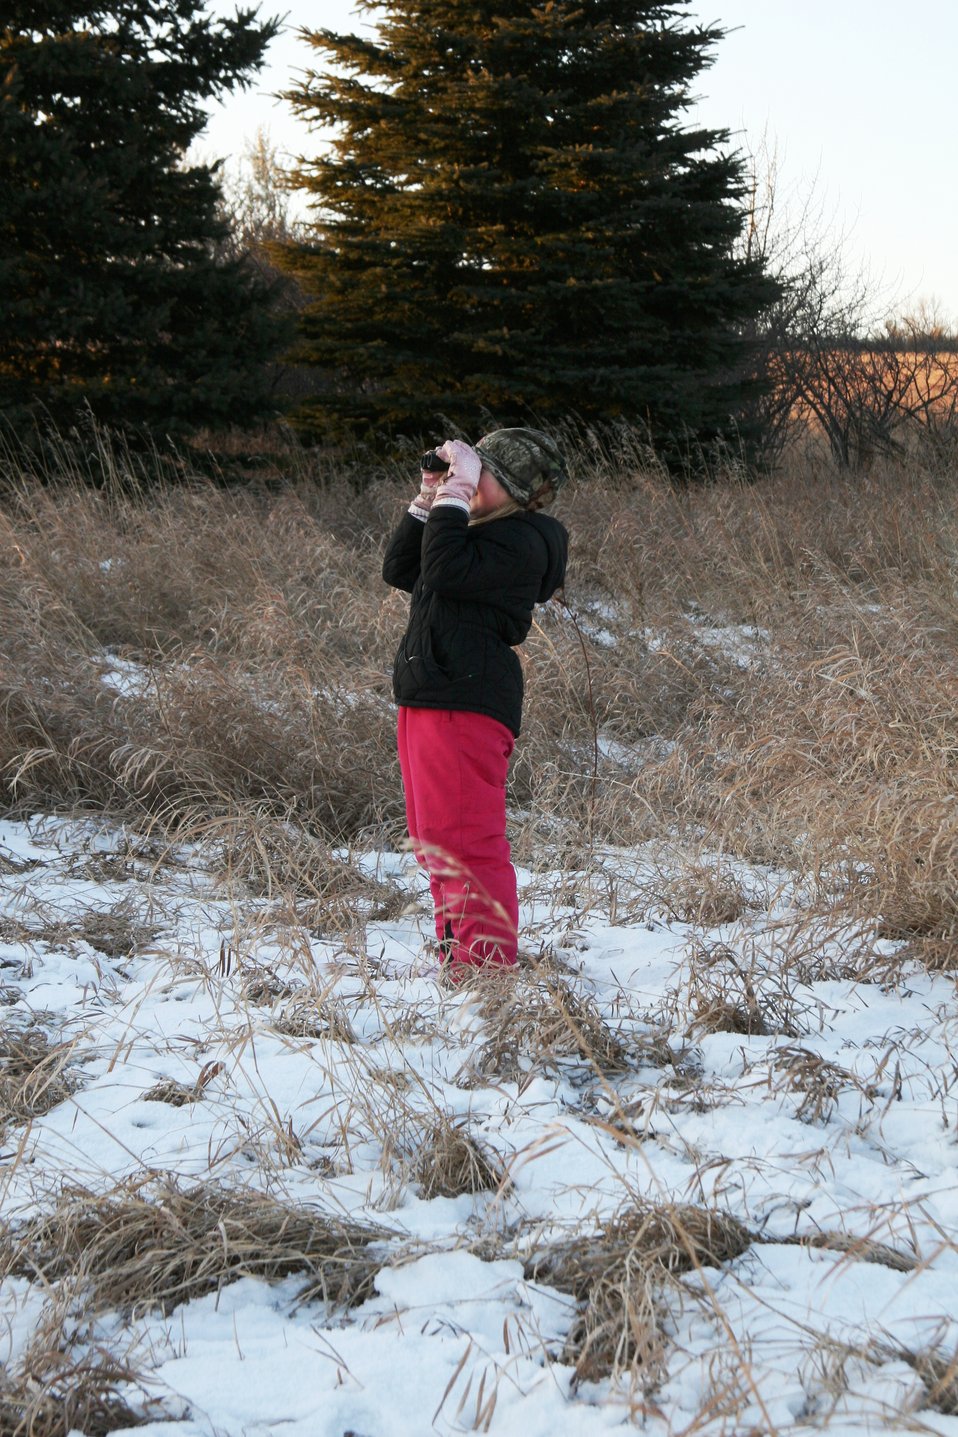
'I hear a bird!'